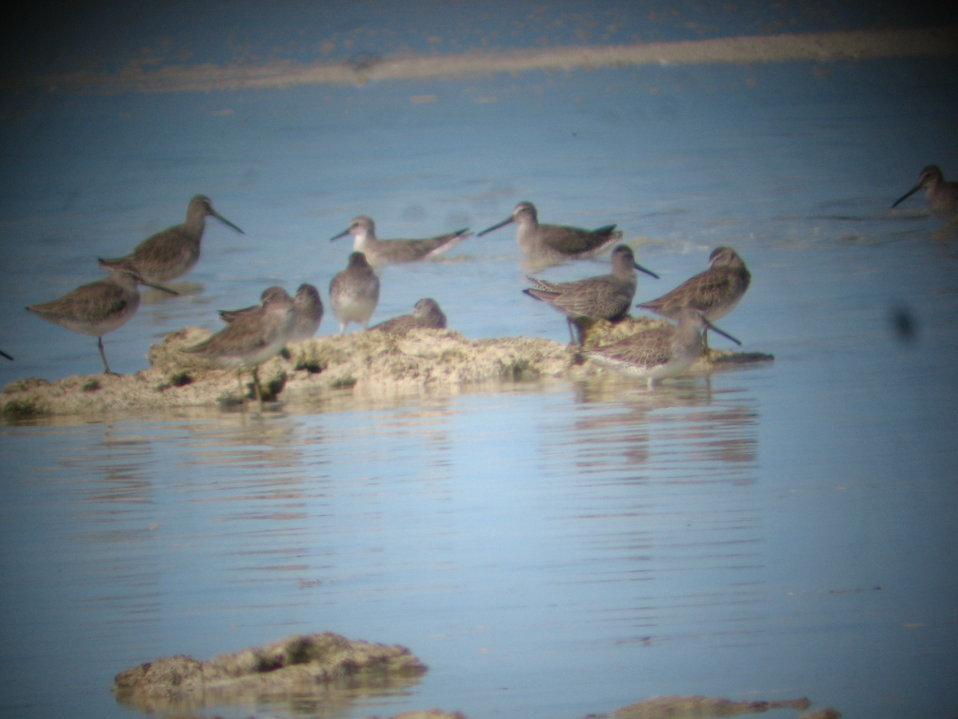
Shorebird flock at Berry Islands - mostly dowitchers (possibly a dunlin in the background?)